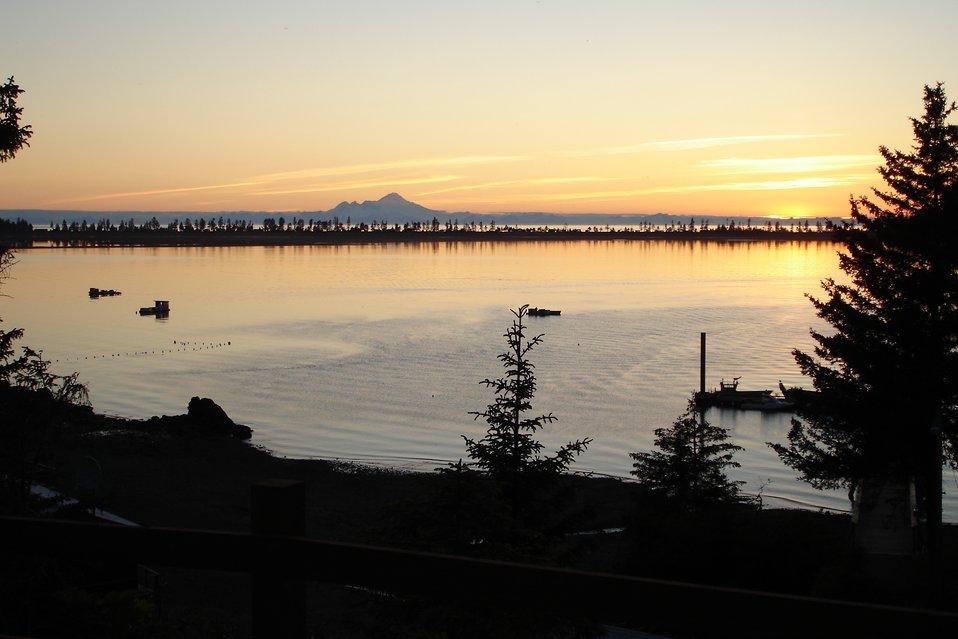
Overlooking Kasitsna Bay at sunset. Mt. Iliamna, an active volcano is in visible in the distance. Photo was taken from the deck of the bunkhouse at the Kasitsna Bay Laboratory